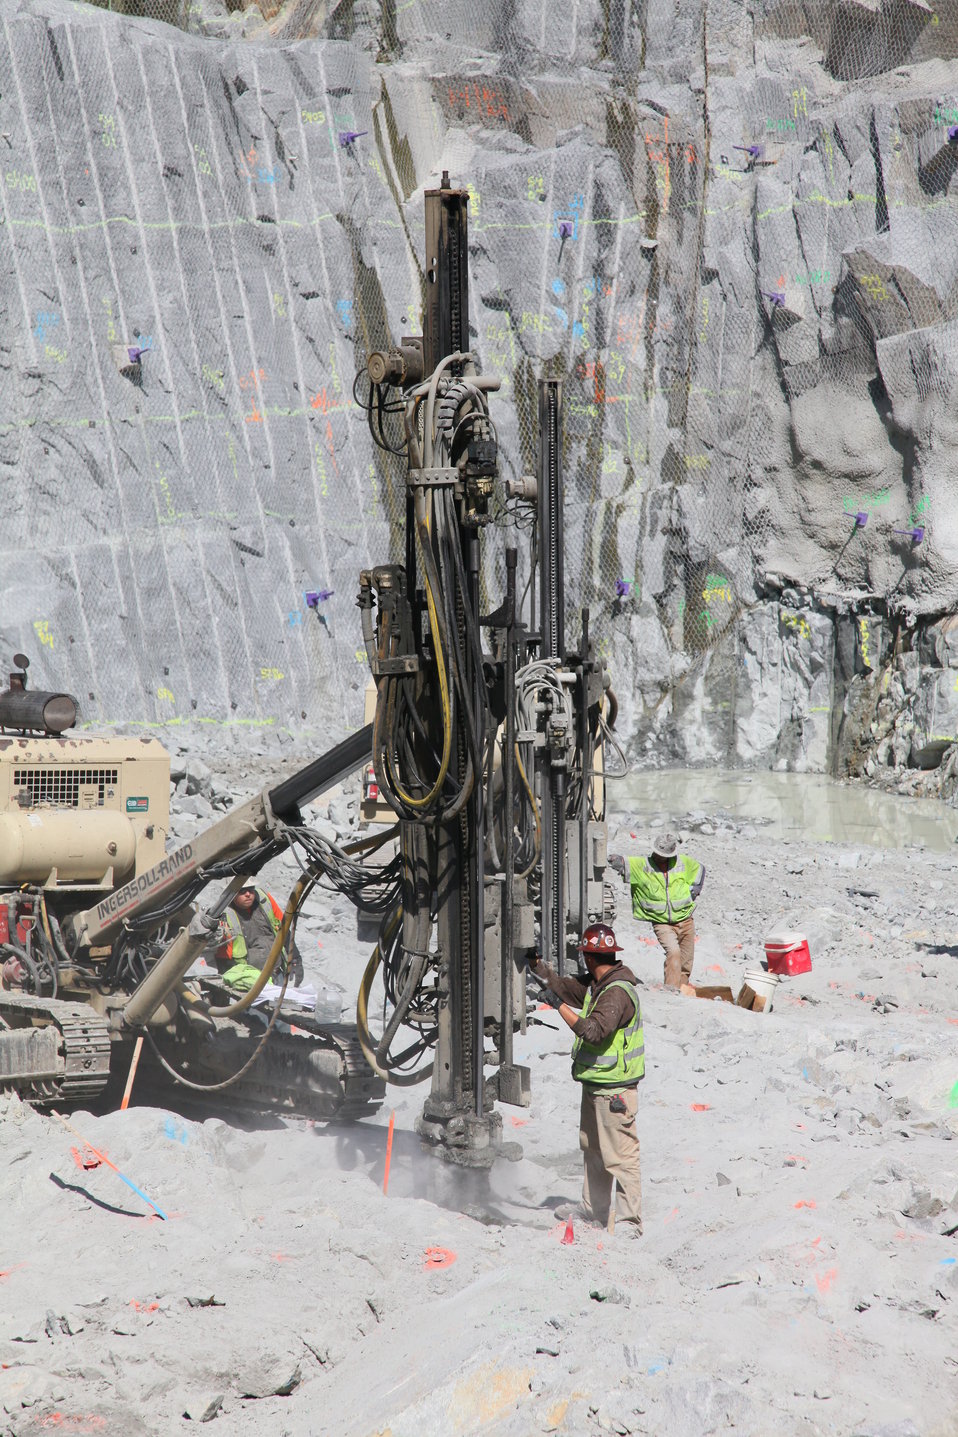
Drilling in the shear zone of the Folsom Dam auxiliary spillway

Contractors for the U.S. Army Corps of Engineers Sacramento District drill blasting holes in the rock at the Folsom dam auxiliary spillway site in Folsom, Calif., April 5, 2012. The rock will be blasted and removed from the shear zone. The spillway, scheduled to be ready for use in 2017, will allow Folsom Dam to release water sooner and more safely. The project is part of the Folsom Dam Joint Federal Project, a joint effort of the U.S. Army Corps of Engineers Sacramento District, the U.S. Bureau of Reclamation, the Central Valley Flood Protection Board and the Sacramento Area Flood Control Agency to improve the safety of the dam and reduce flood risk for the greater Sacramento area.